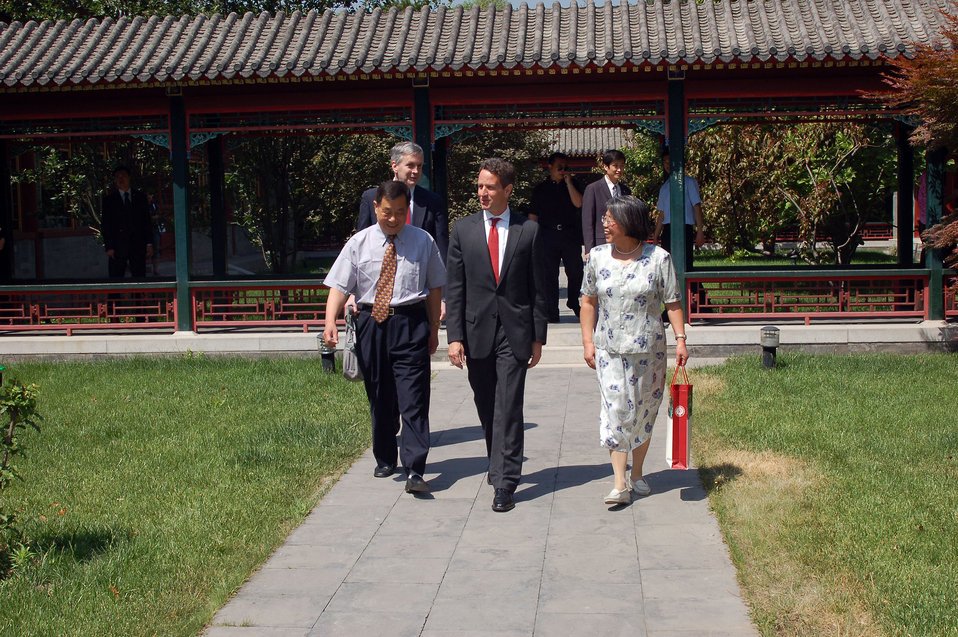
China trip: May 31-June 2 2009

Secretary Geithner and his former professors on a campus tour of Peking University where he studied for two summers as a college student.